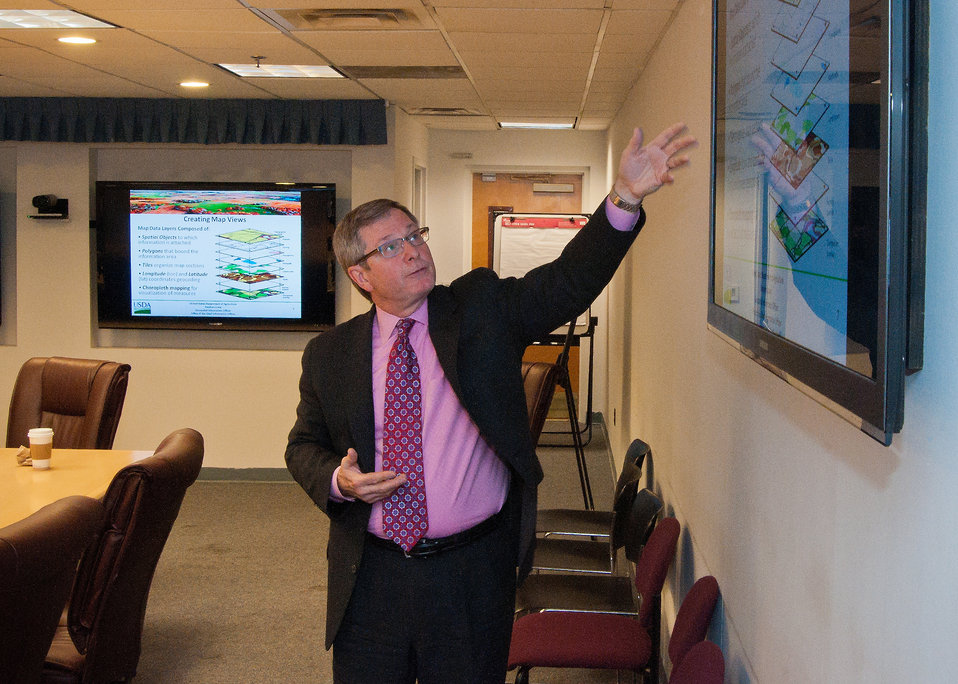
Stephen Lowe explains Geospatial Support Services to students from Edison Academy in Fairfax, VA during the annual U.S. Department of Agriculture’s (USDA) Information Technology (IT) Job Shadow Day held by the USDA Office of the Chief Information Officer (OCIO) to introduce local high school students to careers in information technology in Washington, D.C. on Tuesday, Apr. 2, 2013.